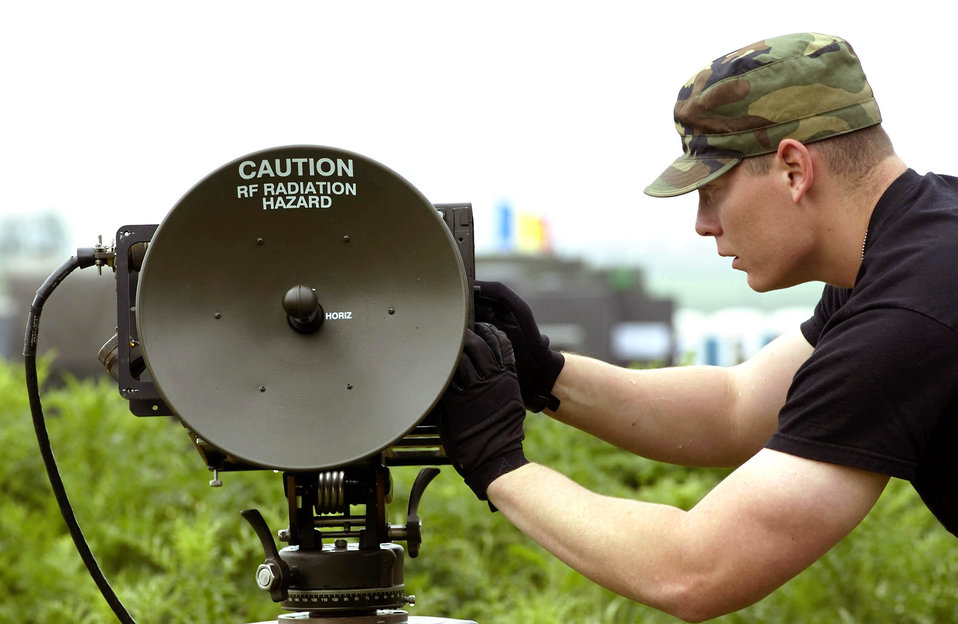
Strong endeavors

MIHAIL KOGALNICEANU AIRFIELD, Romania -- Senior Airman Lawrence Tobin prepares a modulator here before exercise Combined Endeavor 2005. Airmen with the 1st Combat Communications Squadron from Ramstein Air Base, Germany, prepared communication equipment to test the interoperability of command, control, communications and computer systems among 1,200 servicemembers and civilians from more than 43 countries. The Airmen successfully completed more than 1,400 tests.